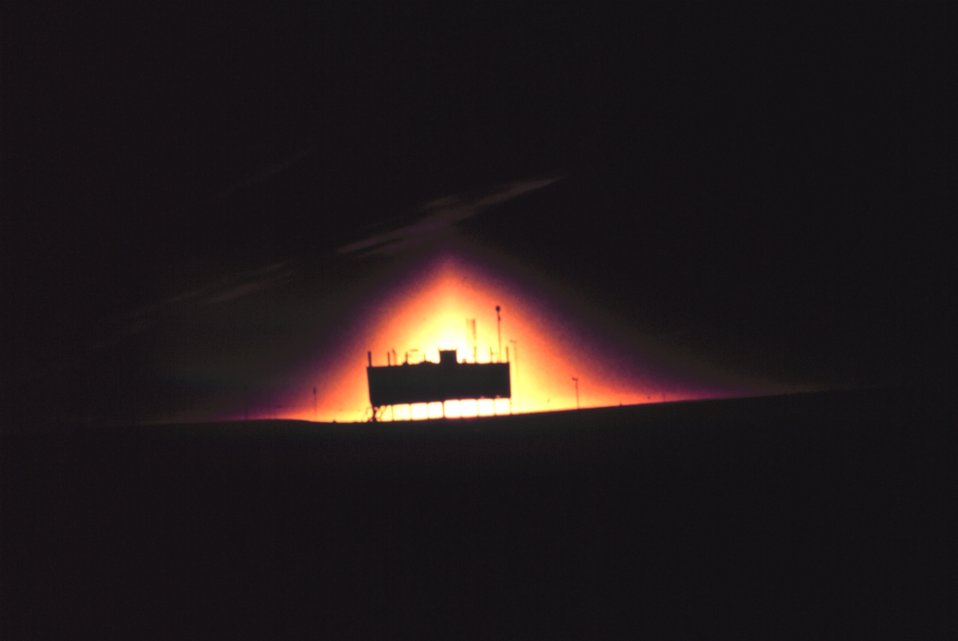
A bizarre effect of time-lapse photography makes Clean Air Facility appear to be illuminated by triangular shaft of reflected sunlight.